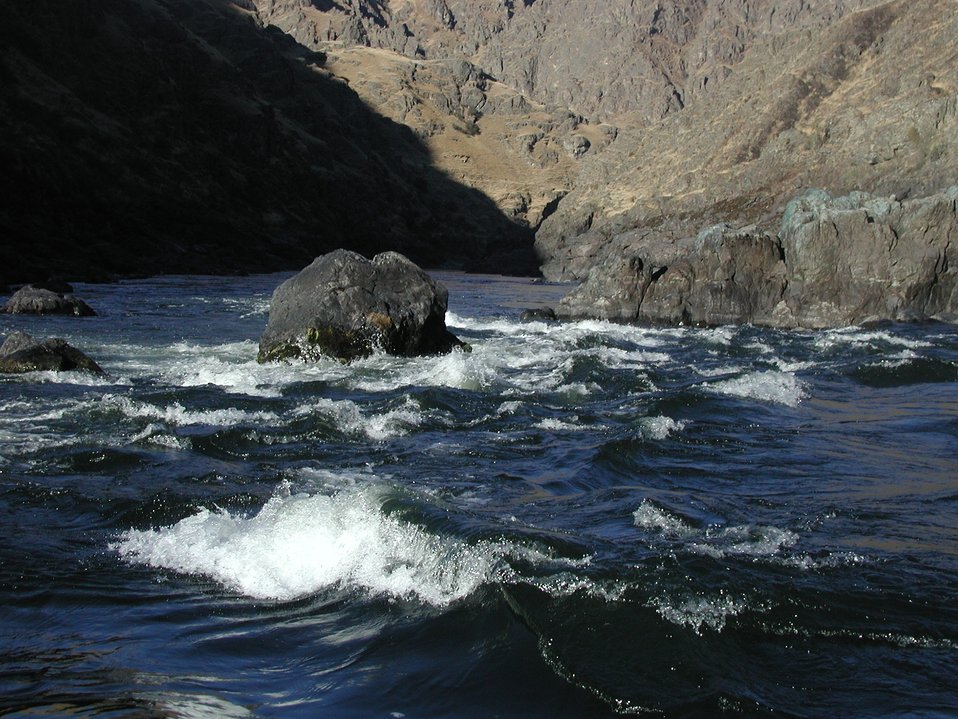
Recreation Rafting on Lower Salmon River Cottonwood Field Office UCSC Upper Columbia Salmon Clearwater District